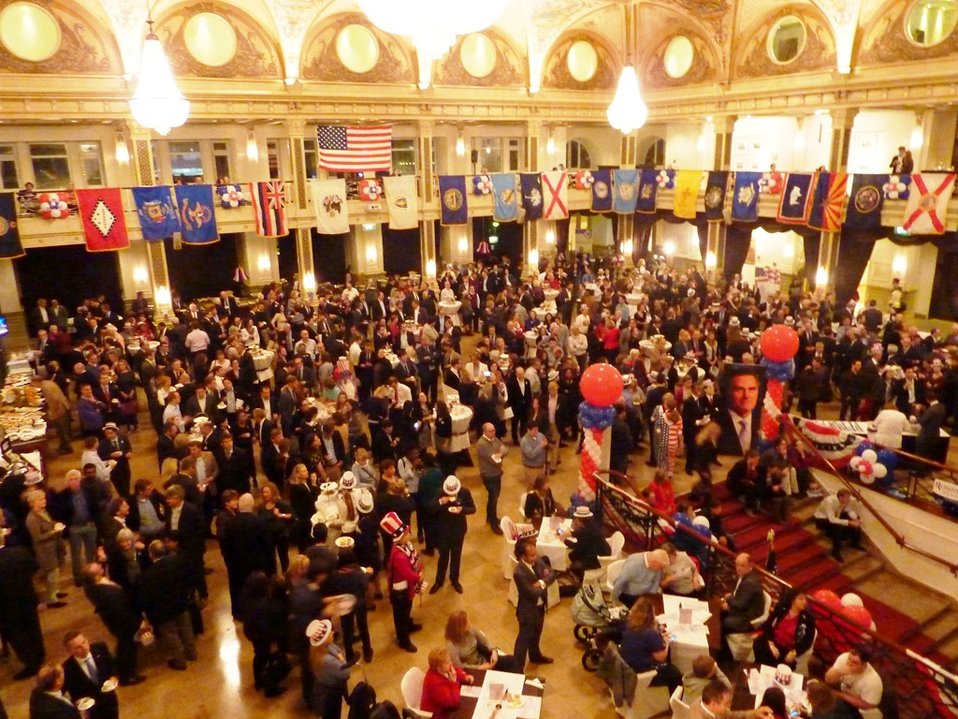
The U.S. Embassy in The Hague Hosts an Election Breakfast

The U.S. Embassy in the Hague, Netherlands hosts “Who is the President?” Election Breakfast, a tradition in the Netherlands for over 30 years, on November 7, 2012.